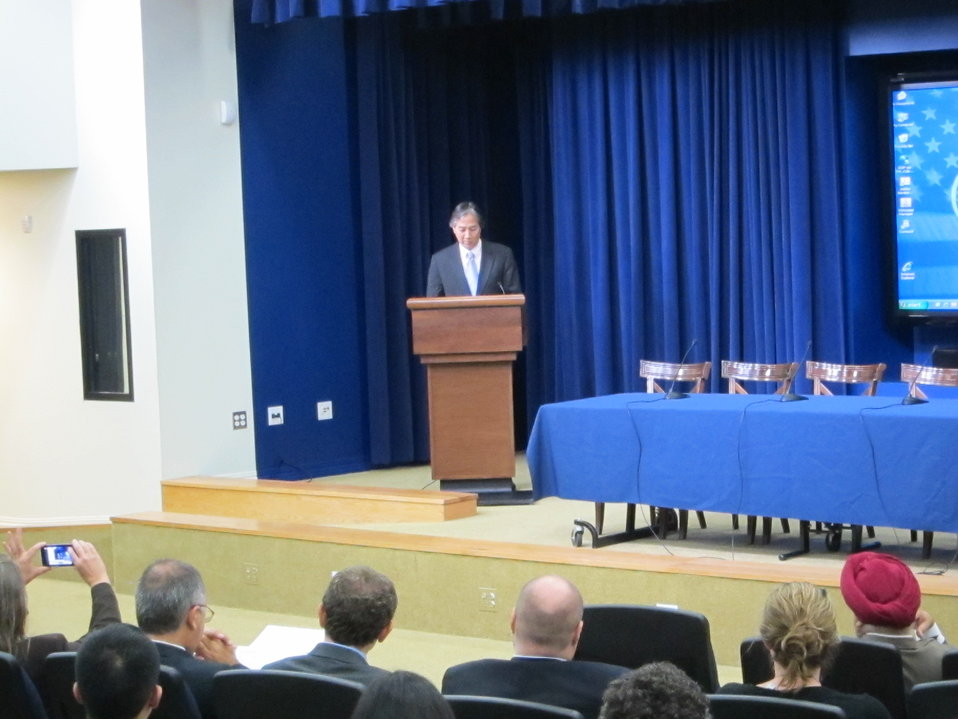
WH 2012 World Hepatitis Day Event